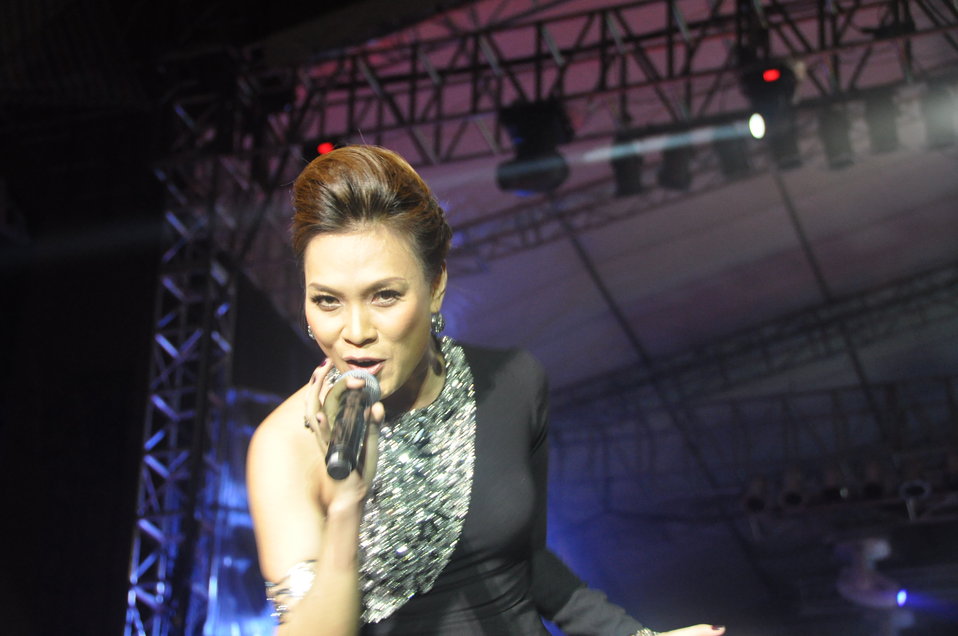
My Tam Performs at the MTV EXIT concert in Hanoi against human trafficking

USAID co-sponsors MTV EXIT concert, campaign against human trafficking